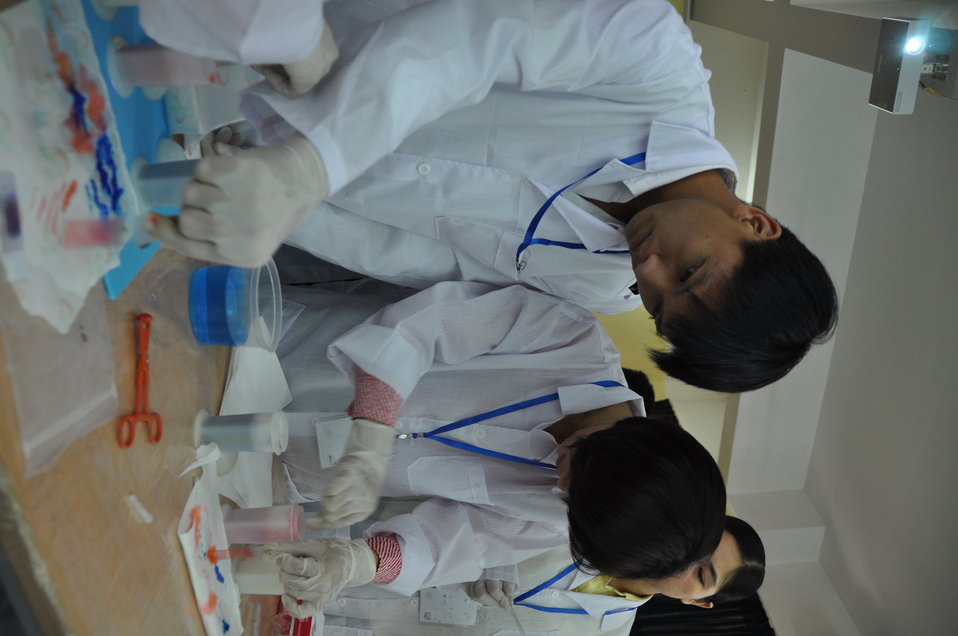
USAID EPT Smithsonian Pathology Training to Detect Emerging Infectious Diseases Wildlife and Other Animals in Vietnam Workshop